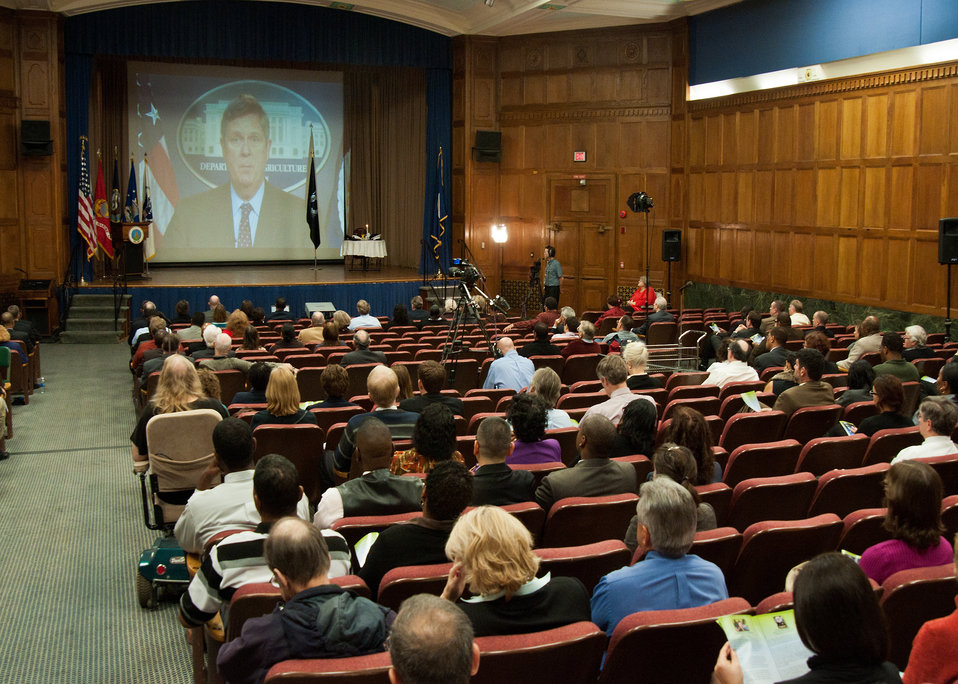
Agriculture Secretary Tom Vilsack addresses the United States Department of Agriculture Veteran’s Day celebration by remote video. It was broadcast into the Jefferson Auditorium on Thursday, November 10, 2011, in Washington, DC.